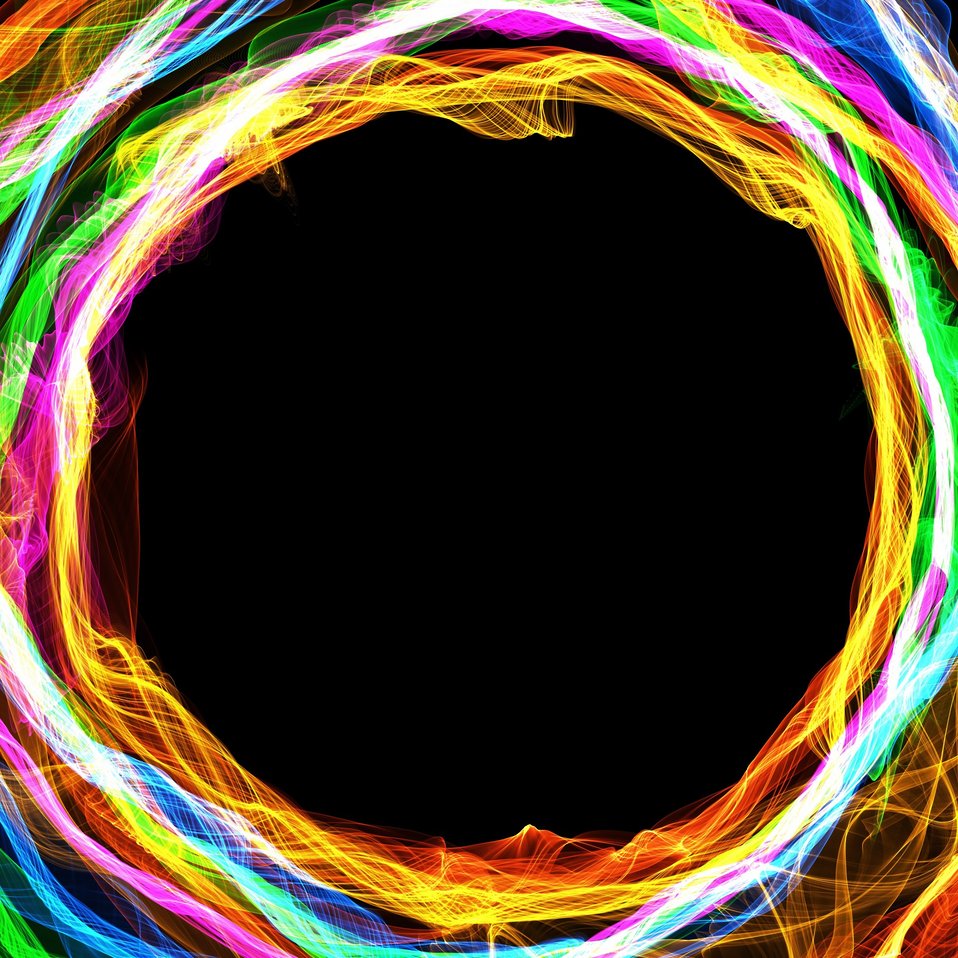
Round rainbow border

Clipart illustration of an abstract round page border..